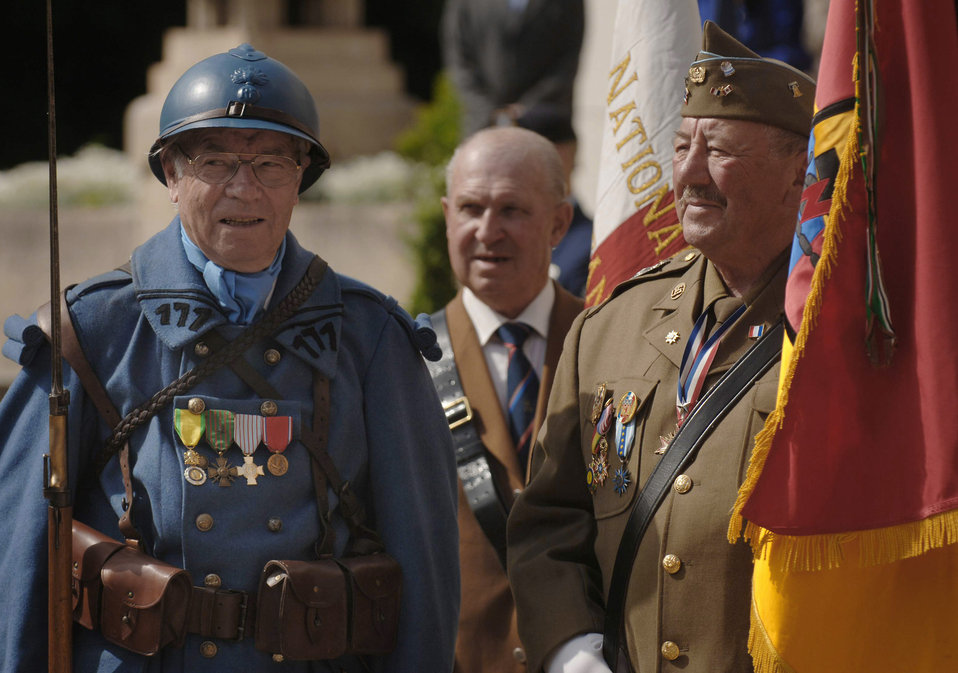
America's first combat aviators memorialized

French military veterans Roger Prevost and Roger Benier dress in vintage World War I uniforms and wear the colors of the 3rd Army, 7th Armored Division during a memorial ceremony outside of Paris, paying homage to the United States' first combat aviators known as the Lafayette Escadrille. The all-American squadron of volunteers flew under the French flag during World War I.